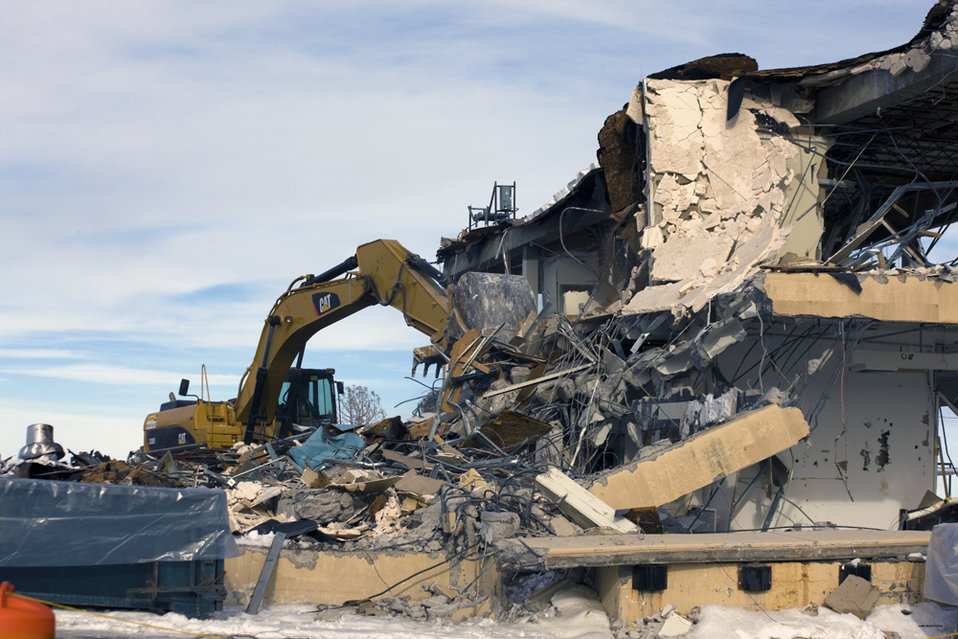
A Safe End to Cold War Facilities

The demolition of 24 buildings at Technical Area 21 at Los Alamos National Laboratory was completed six months ahead of schedule.

Few buildings remain at what was once a bustling research complex at Los Alamos National Laboratory’s Technical Area 21 (TA-21). The site that once housed 39 buildings is now mostly a smoothly graded mesa.